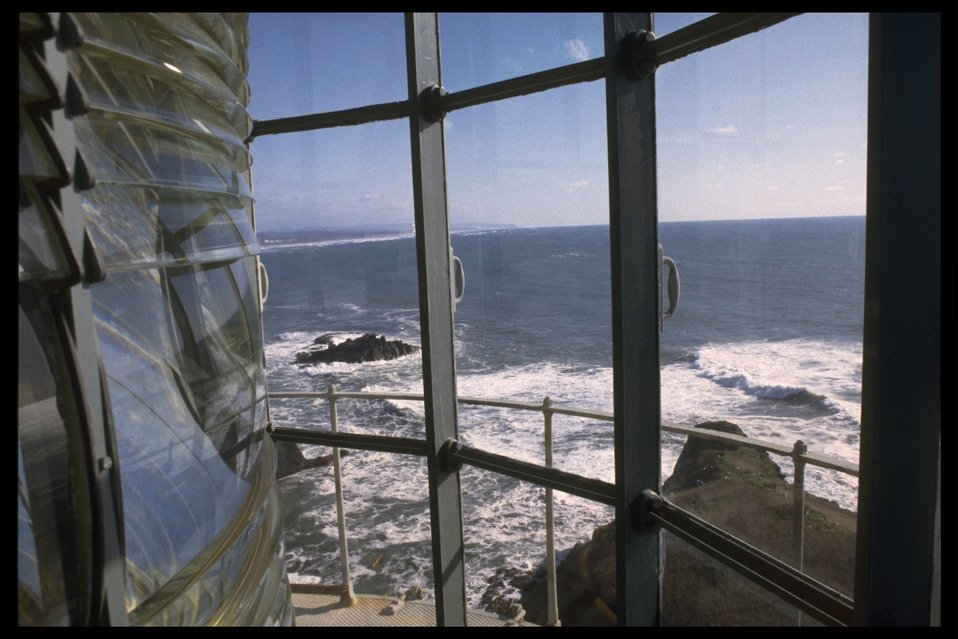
View from Yaquina Head Lighthouse lens area.